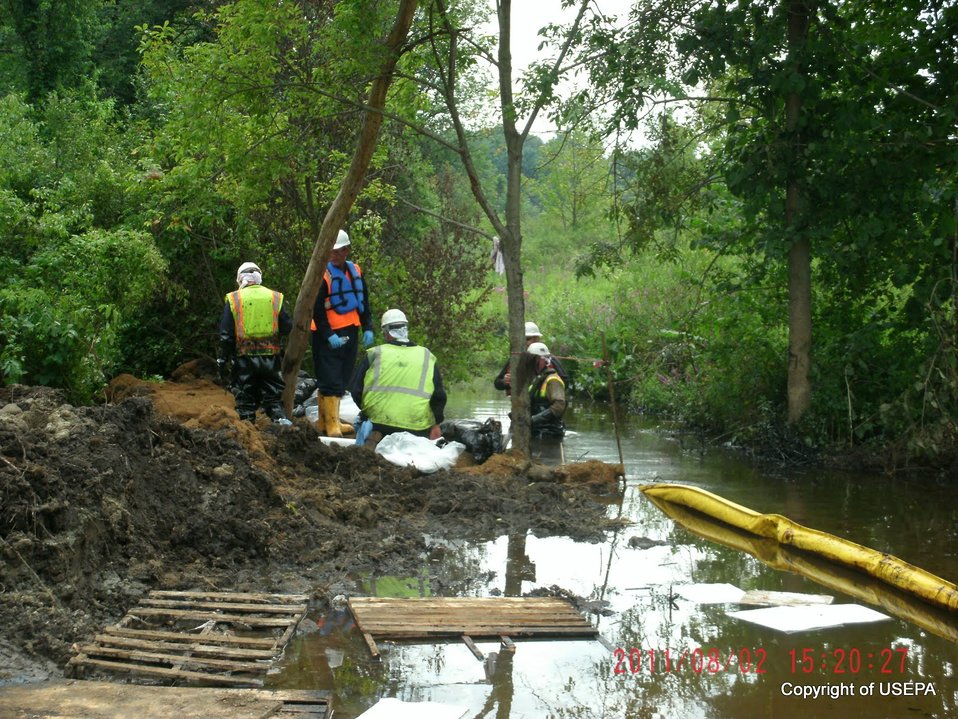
Air Monitoring

Crews work to set up air monitoring at areas along Talmadge Creek near Marshall, Michigan